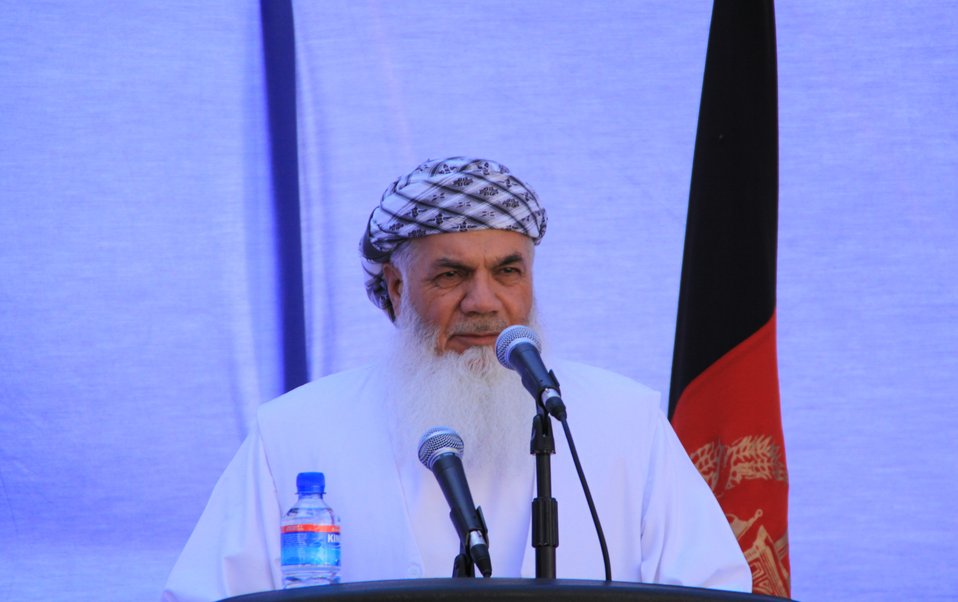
105 MW Tarakhil Power Plant Handover